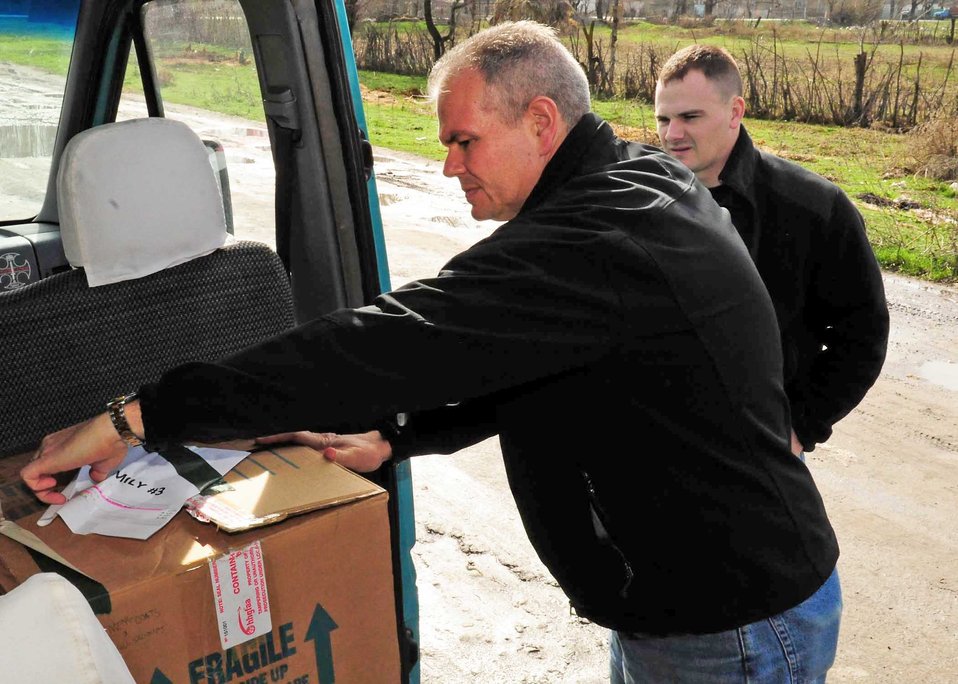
Manas Airmen deliver care packages to Kyrgyz villagers

Lt. Col. Rex Vanderwood and Tech. Sgt. Jake Mayo unload a box of humanitarian assistance items collected from stateside bases and friends to distribute to families March 18, 2010, in Manas Village, Kyrgyzstan. Colonel Vanderwood is the 376th Expeditionary Mission Support Group deputy commander. Sergeant Mayo is the 376th Expeditionary Logistics Readiness Squadron vehicle maintenance NCO in charge deployed from the Air National Guard in Birmingham, Ala.